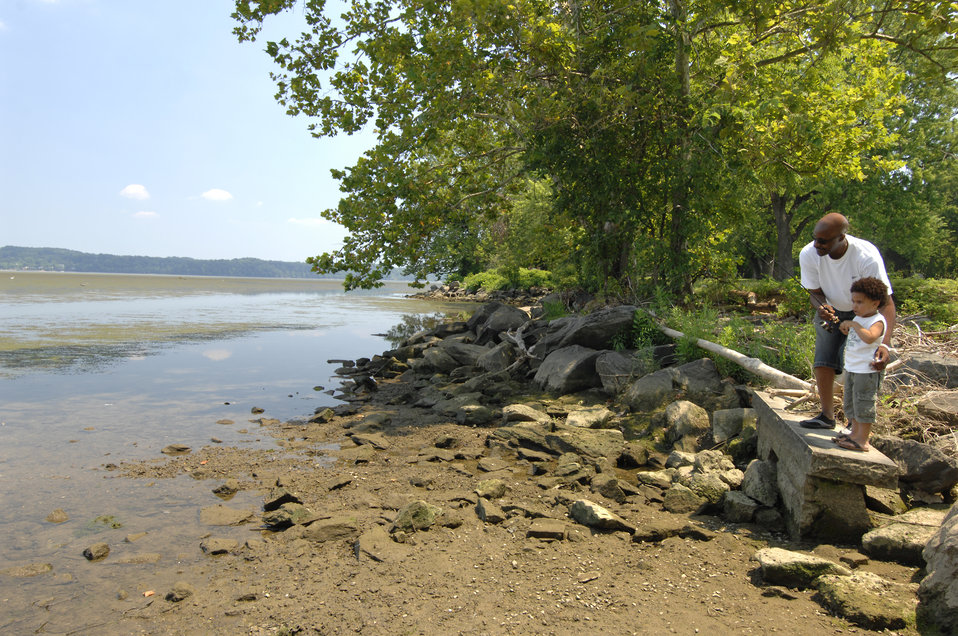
Local residents and visitors enjoy fishing in the Chesapeake Bay, Maryland on July 14, 2008.